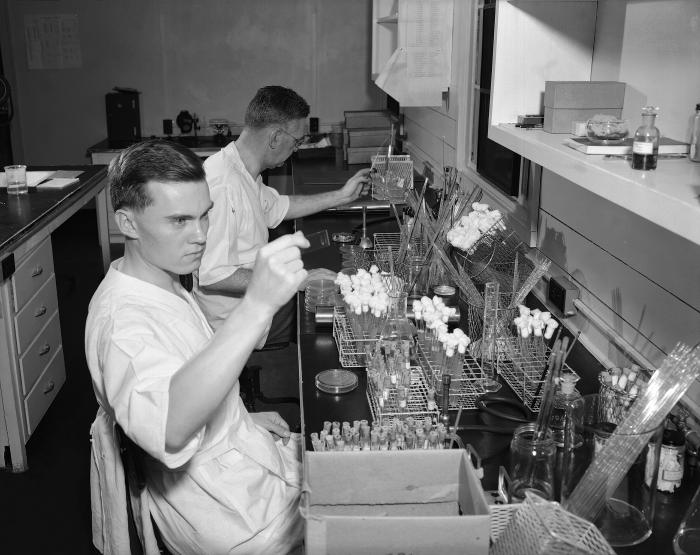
This historic image, photographed sometime between 1948 and 1963, featured two men seated in their Enteric Bacteriology Unit laboratory performing a study focused on bacterial organisms, which are known to cause gastrointestinal diseases, including diarrhea and dysentery. The two men depicted here were Dr. P.R. Edwards, of the U.S. Public Health Service (background), and George Herman.